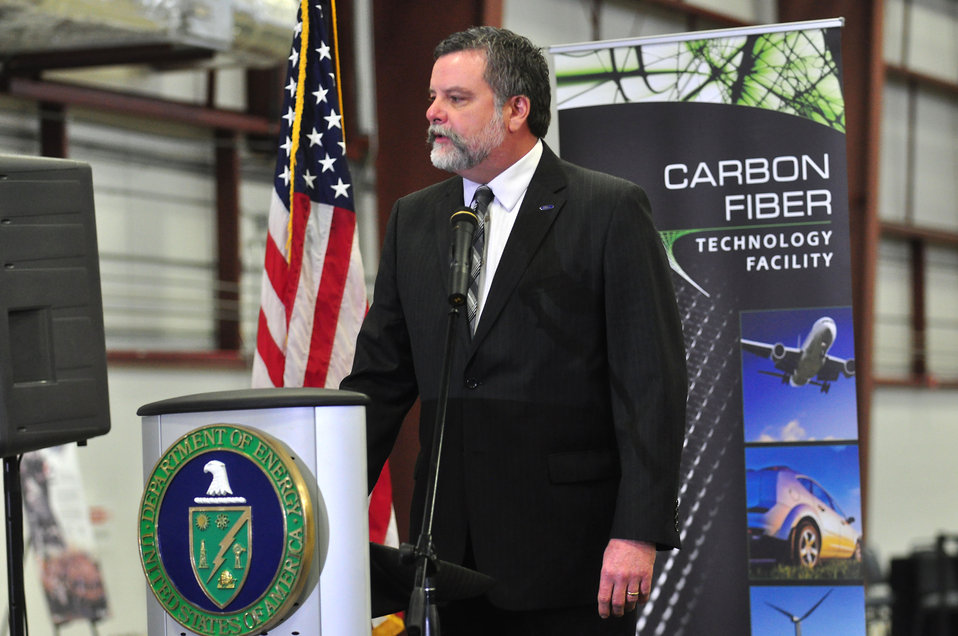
Carbon Fiber Technology Facilty Open House Oak Ridge Tennessee

13-025 DOE photo Lynn Freeny